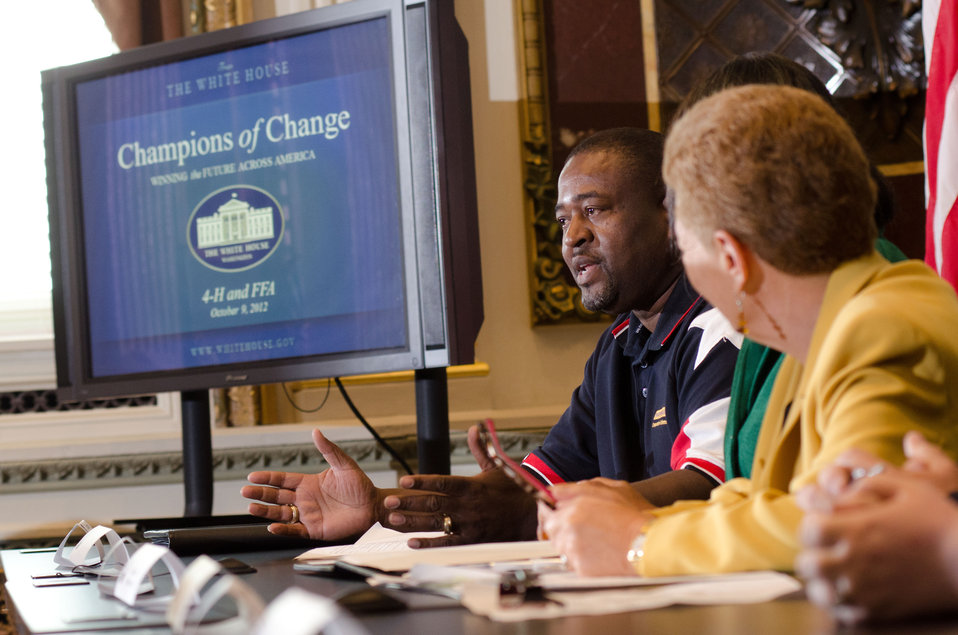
Texas A&M University Cooperative Extension Program 4-H & Youth Development Prairie View Program Specialist, Dr. Samuel G. Roberson Sr. speaks at the Champions of Change Recognition event in the Indian Treaty Room at the Executive Office Building in Washington, D.C. on Tuesday, Oct. 9, 2012. The Champions of Change program was created to honor ordinary Americans doing great work in their communities. Each week, a different sector is highlighted and groups of Champions, ranging from educators to entrepreneurs to community leaders, are recognized for the work they are doing to serve and strengthen their communities.